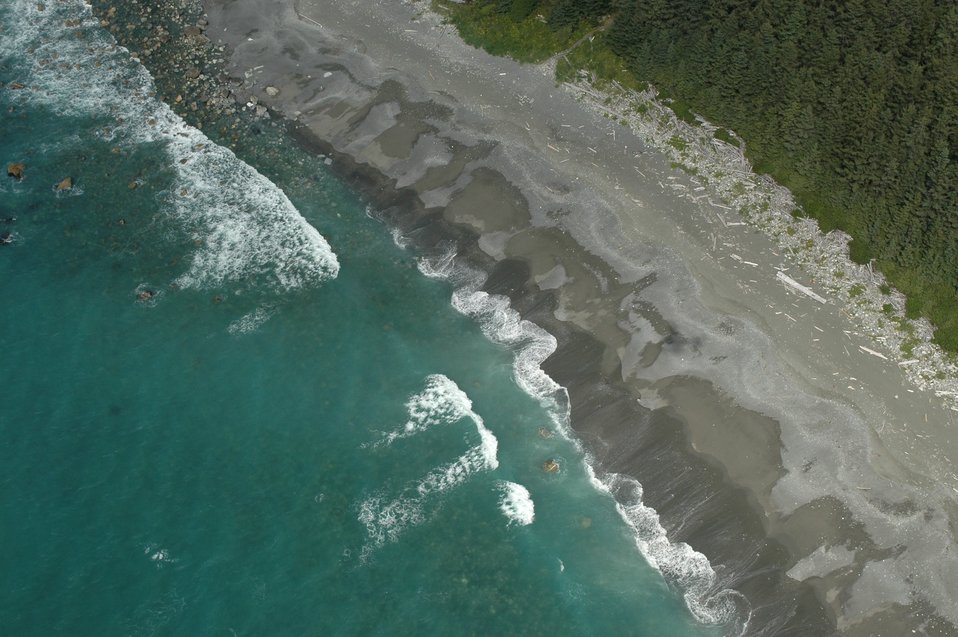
Aerial photograph. Magnificent forest, driftwood, and a gray sand beach with rocky offshore washed by gentle surf.